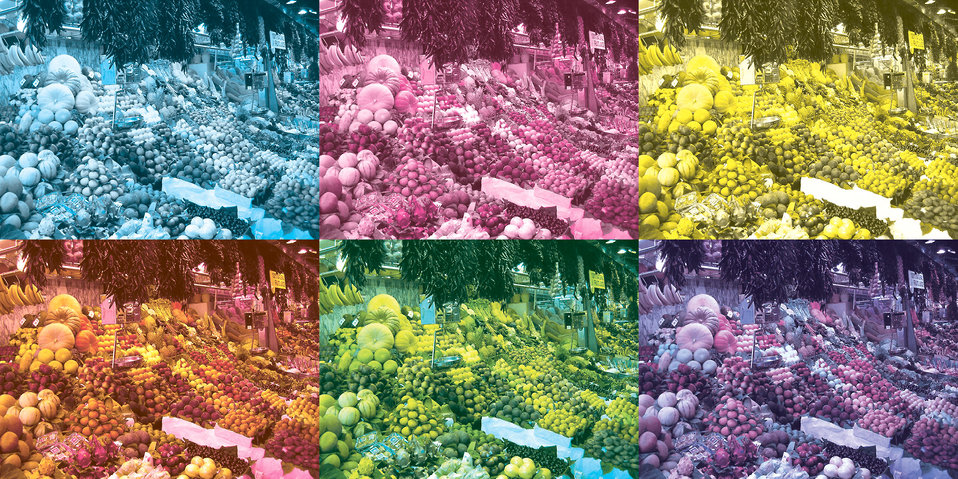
This is a regroupment of the CMY channels and overprints with Black used in La Boqueria destined for newspaper